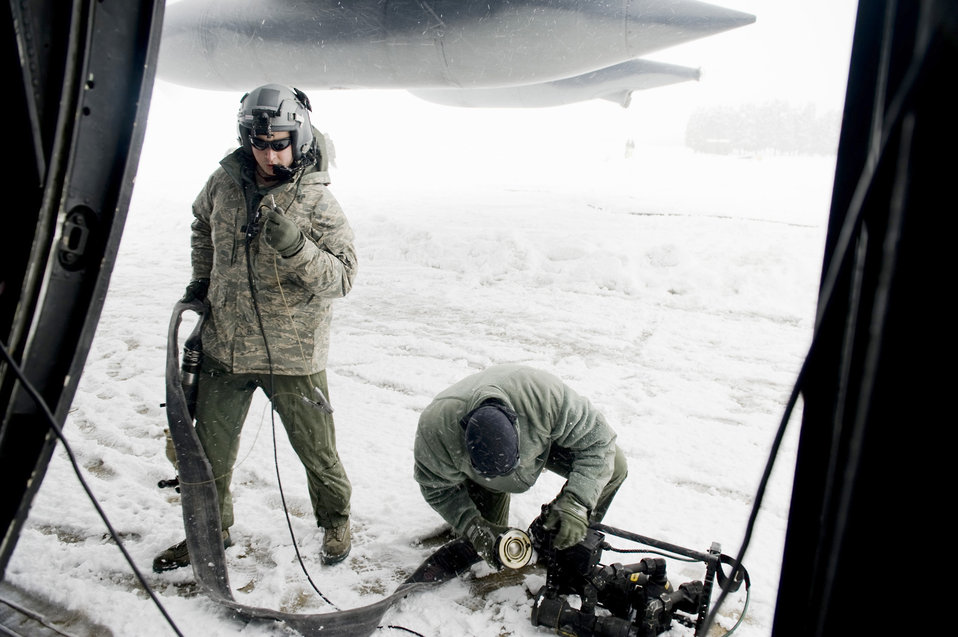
Forward area refueling point

Staff Sgt. Nicholas Wisnoski and Tech. Sgt. Timothy Rodgers set up equipment to defuel an MC-130P Combat Shadow March 17, 2011, at Yamagata Airport, Japan. Sergeant Wisnoski and Sergeant Rogers are assigned to the 353rd Special Operations Group.